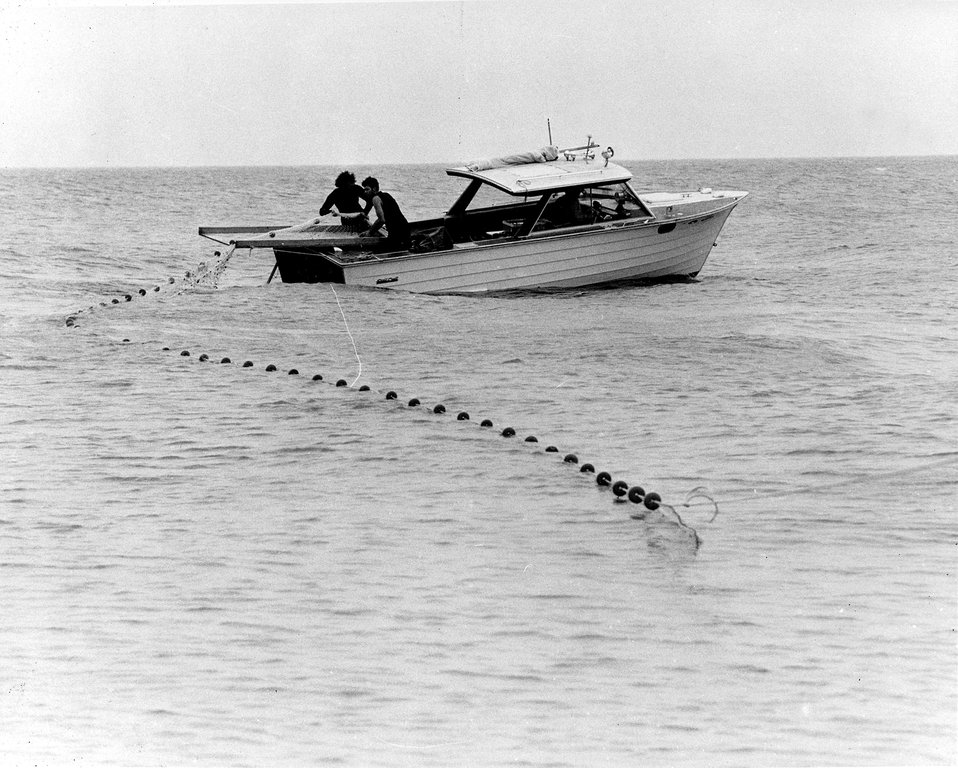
Members of AEC's Argonne Great Lakes Research Team lay a 1000-foot net in the waters of Lake Michigan off the Point Beach Nuclear Power Station.
c1973